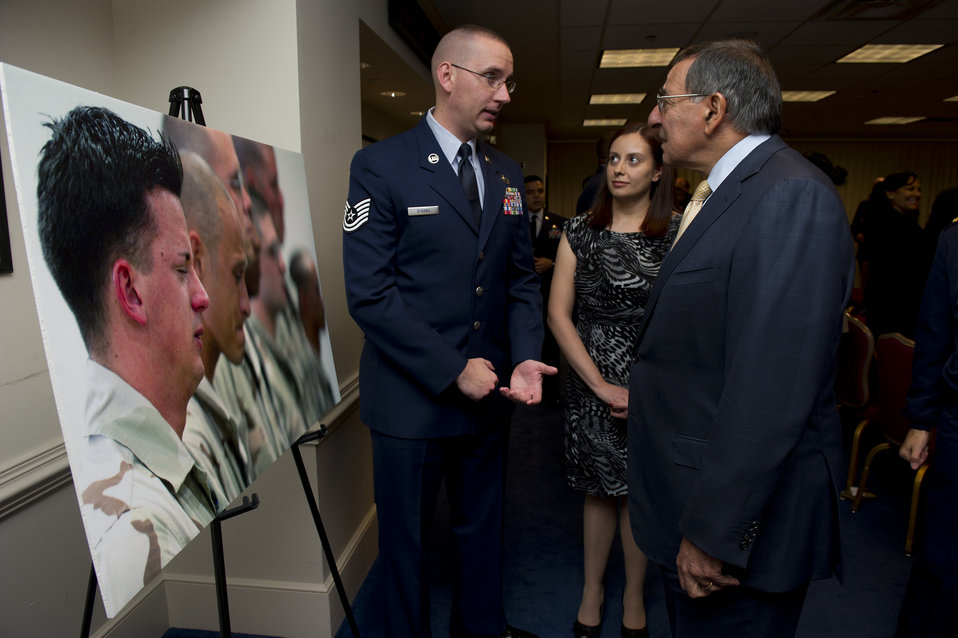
Tears in photo

Secretary of Defense Leon E. Panetta, right, speaks Tech. Sgt. Joshua Strang about Strang's award-winning photograph at the Art in Embassies best in show awards ceremony at the Pentagon, Nov 30, 2012. Strang is an instructor at the Defense Information School at Ft. Meade, Md.